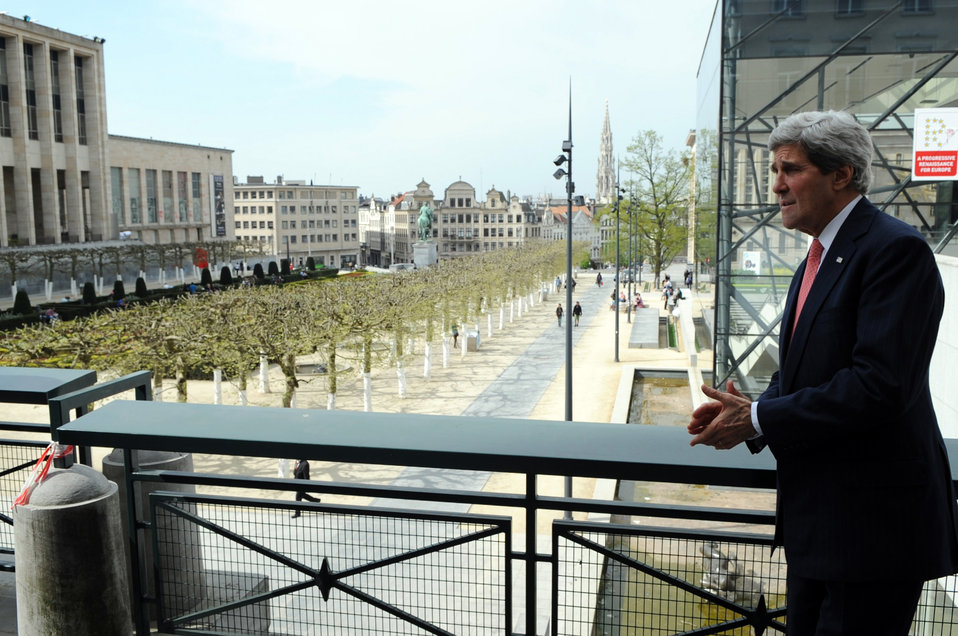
Secretary Kerry Admires the Jardin Monts de Arts in Brussels

U.S. Secretary of State John Kerry admires the Jardin (Garden) Monts de Arts in downtown Brussels, Belgium, after the NATO Ministerial Meetings on April 2, 2014.